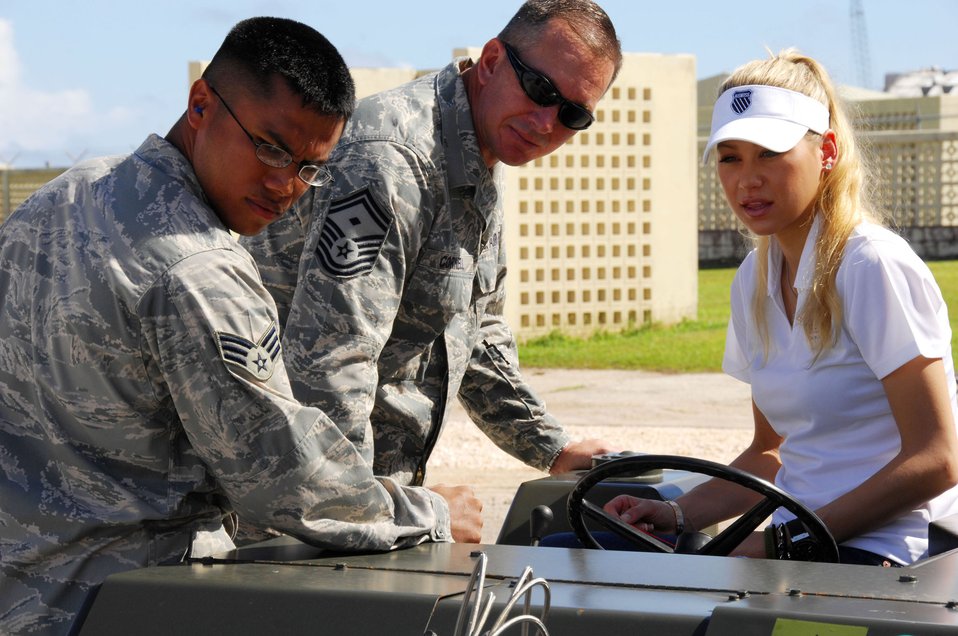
Anna Kournikova visits Andersen

Senior Master Sgt. Paul Cornell and Senior Airman Michael O'Rourkeu show Anna Kournikova how to correctly operate a bomblifter Oct. 29. Ms. Kournikova was on Guam for a two-day tour sponsored by United Service Organizations of Andersen AFB and Naval Base Guam. Sergeant Cornell and Airman O'Rourkeu are assigned to the 36th Maintenance Squadron.